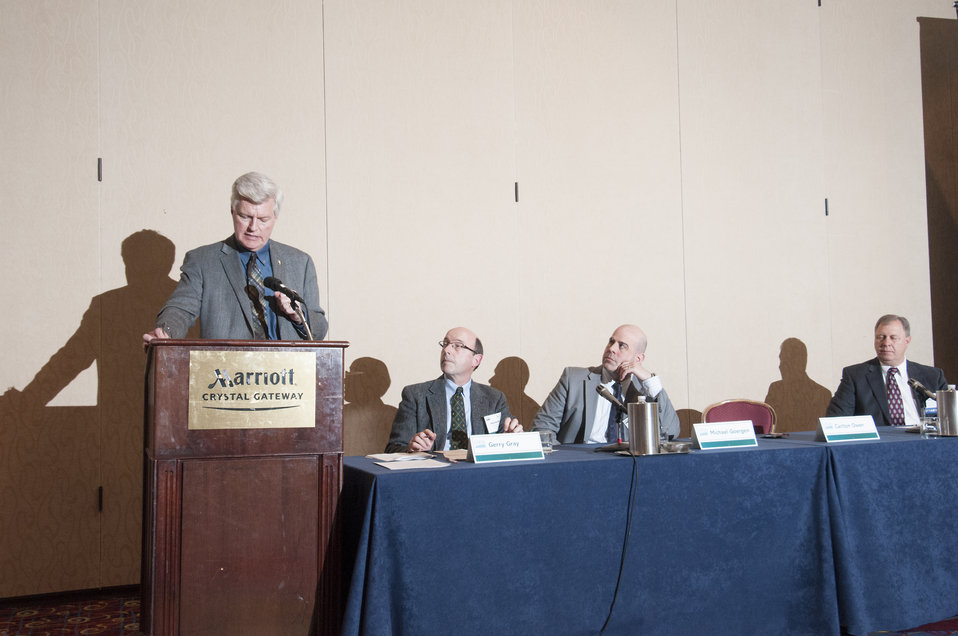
The U.S. Department of Agriculture (USDA) 2013 Agricultural Outlook Forum was held at the Crystal Gateway Marriott Hotel in Arlington, VA on Thursday, Feb. 21, 2013. The breakout session on Threats to Forests and Natural Resources discussed the identification and response to rapidly changing events affecting U.S. forests, including insects and fire, and what this means for agriculture and communities.